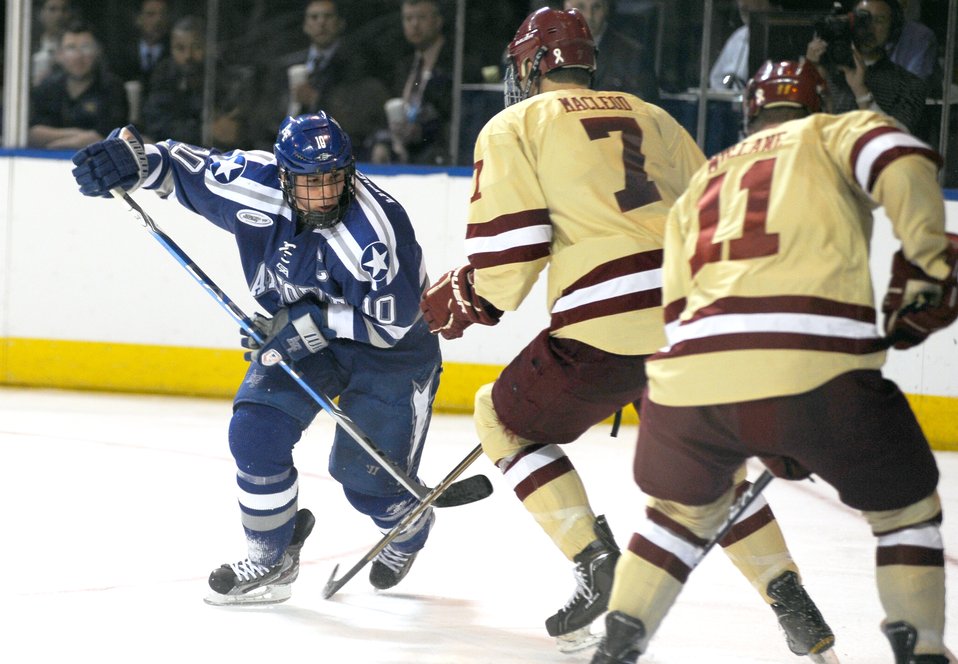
Falcons fall to Eagles in another tournament heartbreaker

Paul Weisgarber tries to push past two Boston College Eagles during the NCAA Hockey Championship Tournament in Worcester, Mass., March 24, 2012. The Air Force Academy Falcons came up short against the Eagles 2-0. Weisgarber is the Falcons’ team captain.